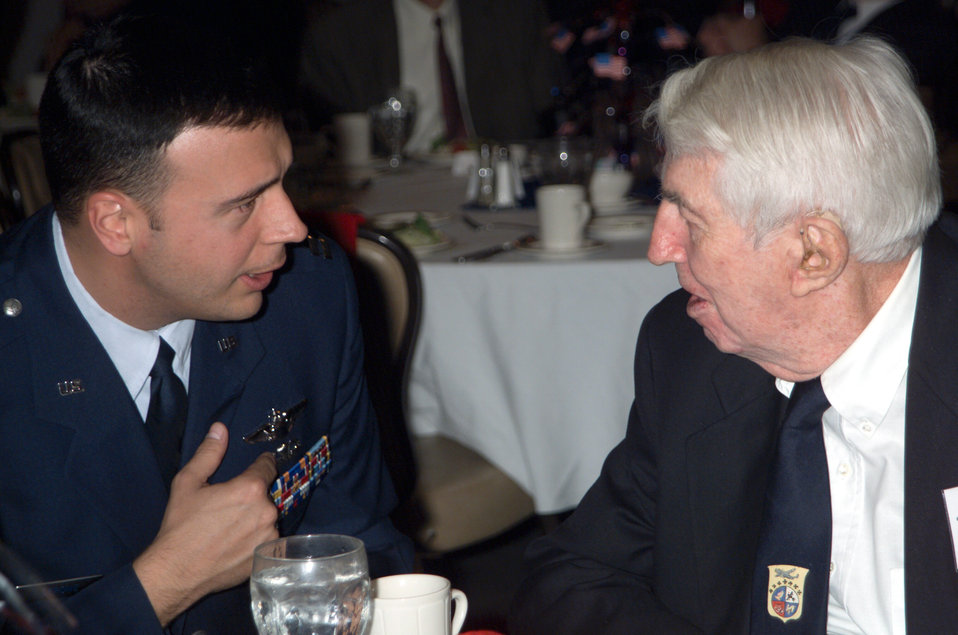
Doolittle Raiders reunite

DAVIS-MONTHAN AIR FORCE BASE, Ariz. -- Capt. Scott Cerone talks with Jack Sims, a Doolittle Raider, during a dinner here April 15 honoring the group's 62nd reunion. Doolittle Raiders were part of the pivotal mission April 18, 1942, to bomb Tokyo as symbolic revenge against Japan's attack on Pearl Harbor, Hawaii. The mission was led by then-Lt. Col. James Doolittle. Seventeen of the 80 raiders are alive today. Captain Cerone is assigned to the base's 357th Fighter Squadron.